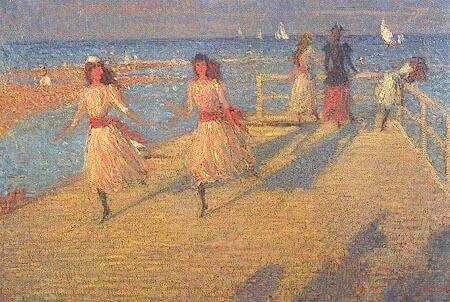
Girls running; Walberswick Pier